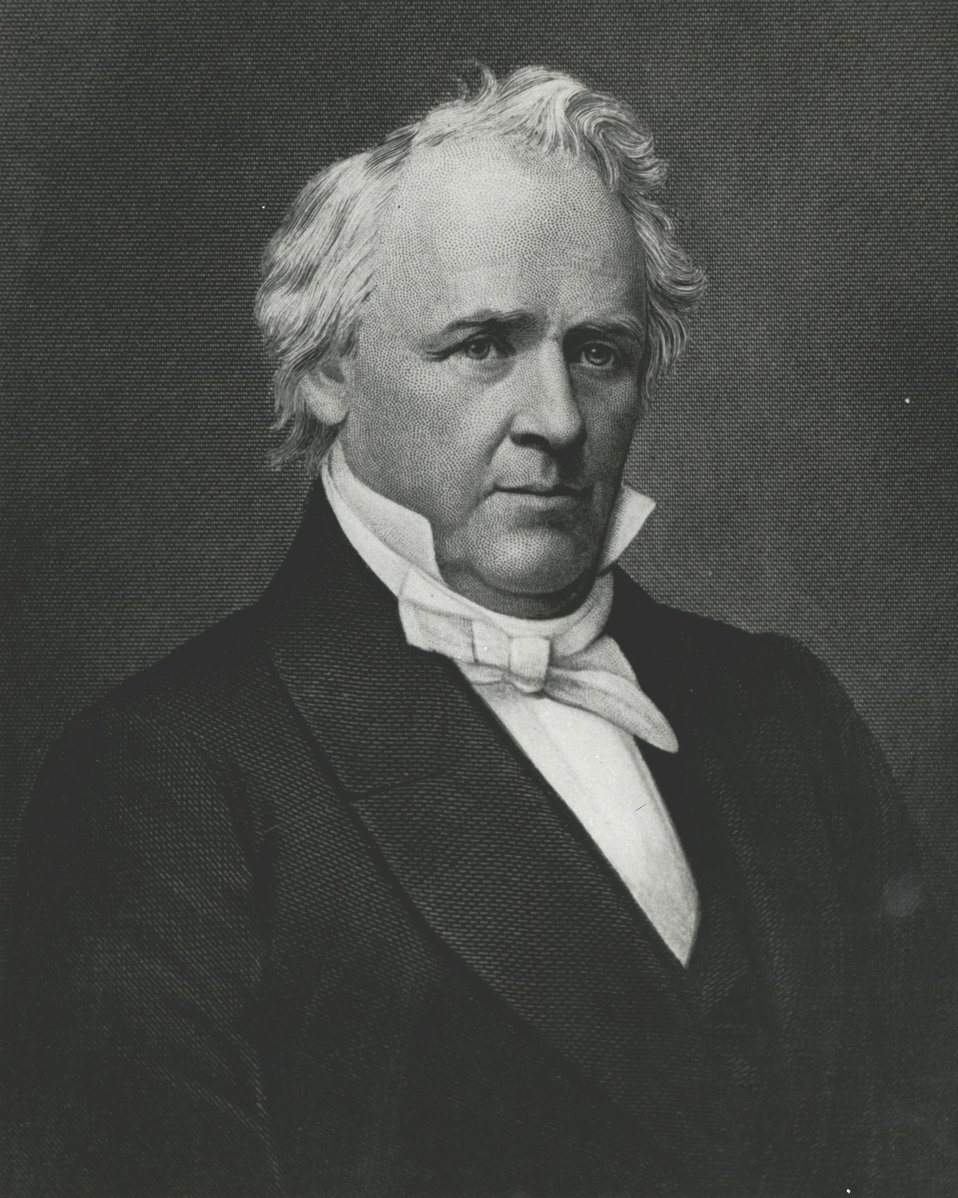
James Buchanan, U.S. Secretary of State, March 10, 1845 to March 7, 1849